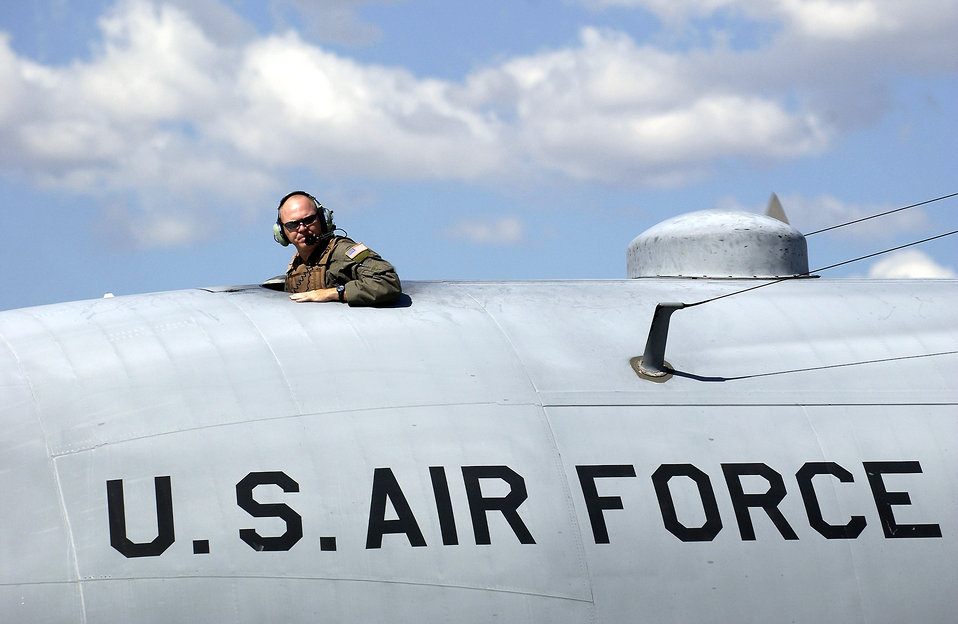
Helping Haiti

PORT-AU-PRINCE, Haiti -- A C-130 Hercules crewmember from Dyess Air Force Base, Texas, scans the ramp before taking off from here March 3.